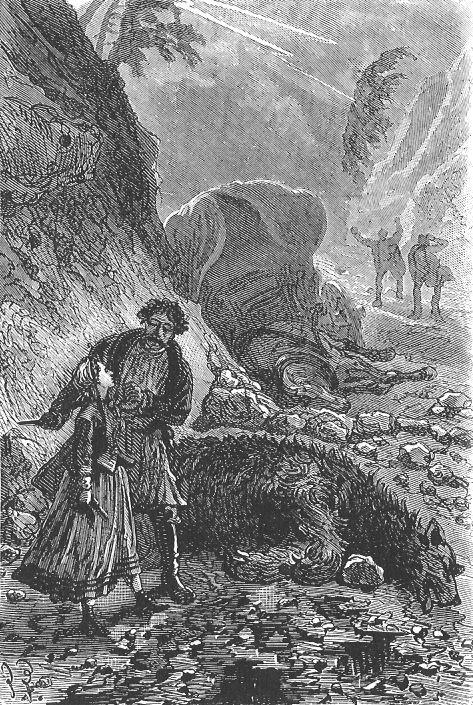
An illustration from the novel 'Michael Strogoff: The Courier of the Czar' by Jules Verne drawn by Jules Férat. Polski: Ilustracja powieści Juliusza Verne'a 'Michał Strogow, kurier carski' autorstwa Julesa Férata. Français : 'Michel Strogoff. Le courier du tzar', Jules Férat. Français : « Tu n’es pas blessée, sœur ?... »